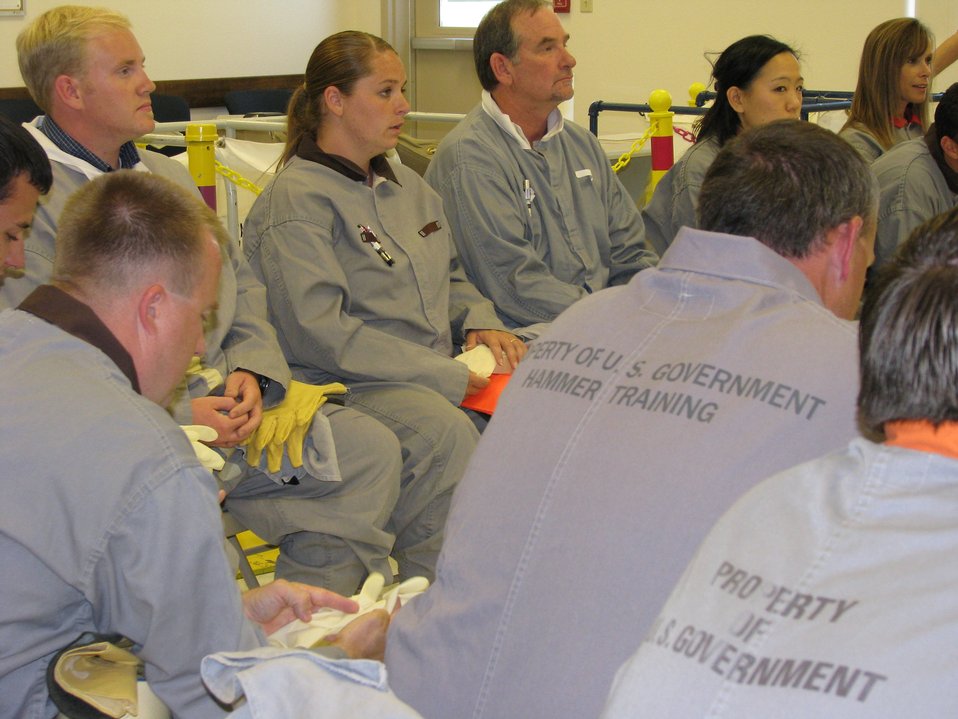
ORP Recovery Act jobs

New hires train to become certified Health Physics Technicians, who help keep coworkers safe from radiological contamination. Recovery Act funding at Hanford's tank farms helped create nearly 600 jobs at the peak of employment last fall.